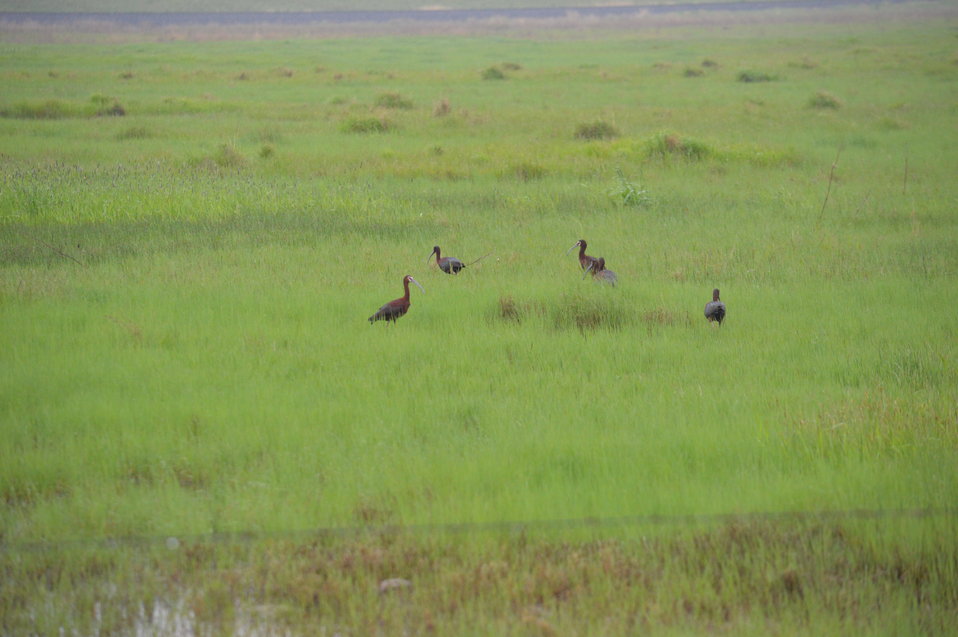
Birds at Lost Lake NWR

Scenery and wildlife at Lost Lake National Wildlife Refuge in North Dakota.